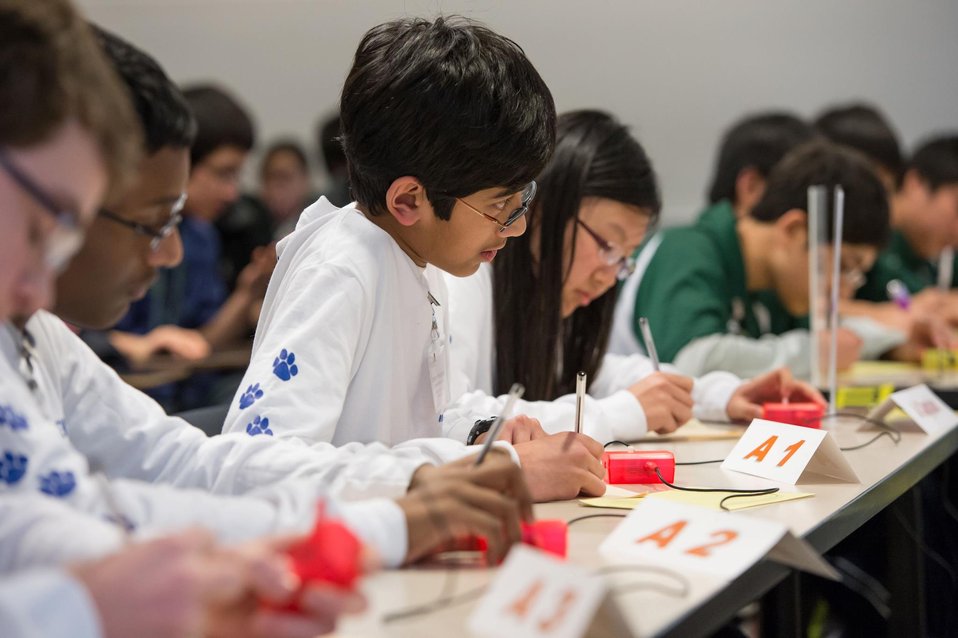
Photo of the Week: Students from Roosevelt Middle School win the 2013 Regional Science Bowl

Each year, the National Science Bowl brings together thousands of middle and high school students from across the country to compete in a range of science disciplines, including biology, chemistry, earth science, physics, astronomy and math.

The members of the winning team, from Roosevelt Middle School of River Forest, Illinois, competed against 14 other teams from across the Midwest in one of the regional competitions in the 23rd Annual U.S. Department of Energy National Science Bowl. This April, the winning teams from each region will compete for a national title in Washington, D.C. View a full gallery of photos from the 2013 Regional Science Bowl at Argonne (1.usa.gov/YSYNqE).

Photo courtesy of Argonne National Laboratory. (1.usa.gov/ZEiSqH)